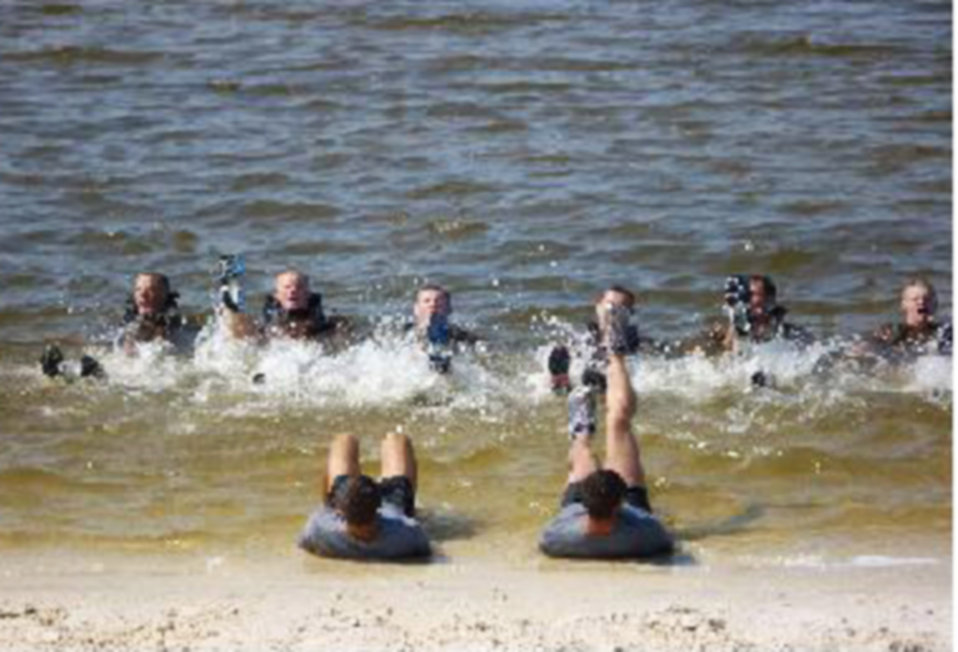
Special operations unit opens professional developement course for ROTC cadets

Cadets from Norwich University Air Force ROTC Det. 867 participate in flutter kicks led by senior cadets from the U.S. Air Force Academy as part of the special operations orientation professional development training Sept. 23, 2009, at Hurlburt Field, Fla. The cadets of Det. 867 were invited to participate in the orientation program recently.